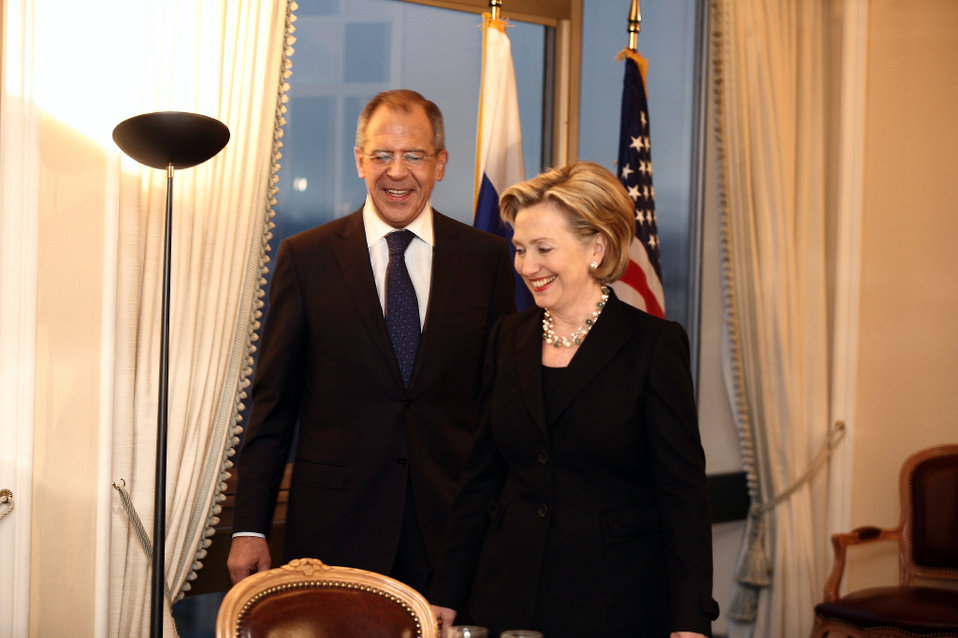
'Restart Button' offered by U.S. Secretary of State Hillary Rodham Clinton to Russian Foreign Minister Sergey Lavrov in Geneva, Switzerland March 6, 2009.